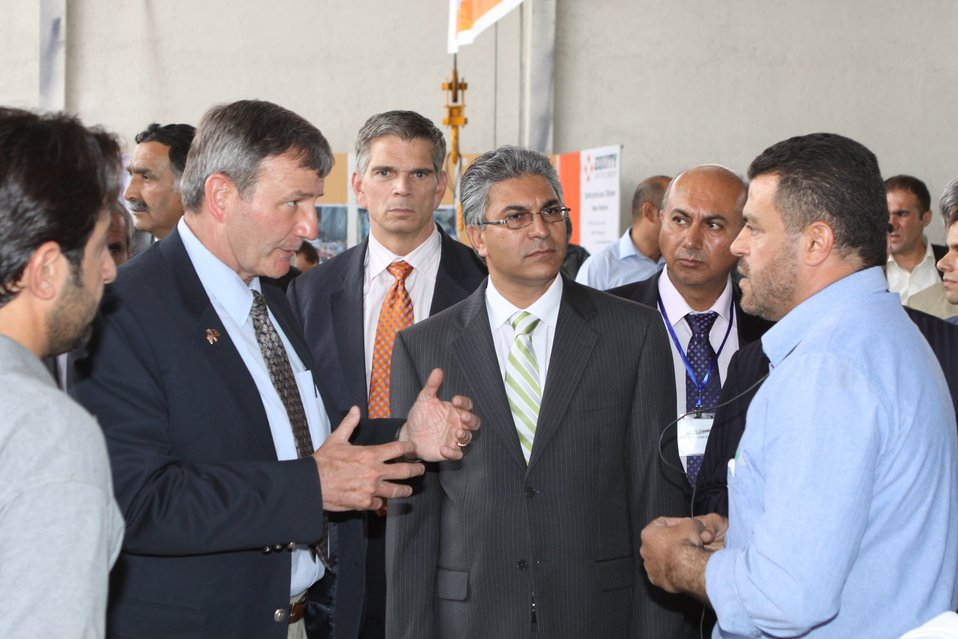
100525 Hirat Marble Conference 413